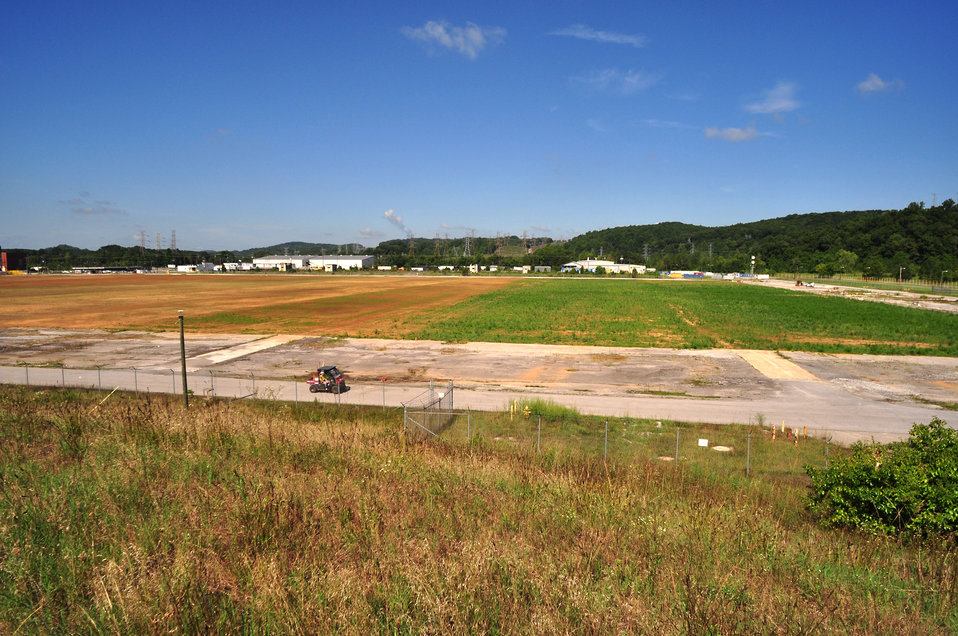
Oak Ridge Finishes Largest Site Demolition to Date

This photo shows the site of Building K-33 following completion of the demolition project.

July 2012 - This month, the Oak Ridge Environmental Management (EM) program finished the final phase of the Building K-33 demolition project. Workers with LATA-Sharp Remediation Services, the prime contractor for the project, removed areas of contaminated soil, backfilled the area with topsoil and seeded the land with grass. In April, they removed a 32-acre concrete slab that served as the foundation for the former 1.4 million-square-foot former gaseous diffusion plant in the East Tennessee Technology Park (ETTP). Constructed in 1954, the K-33 facility enriched uranium until 1985.